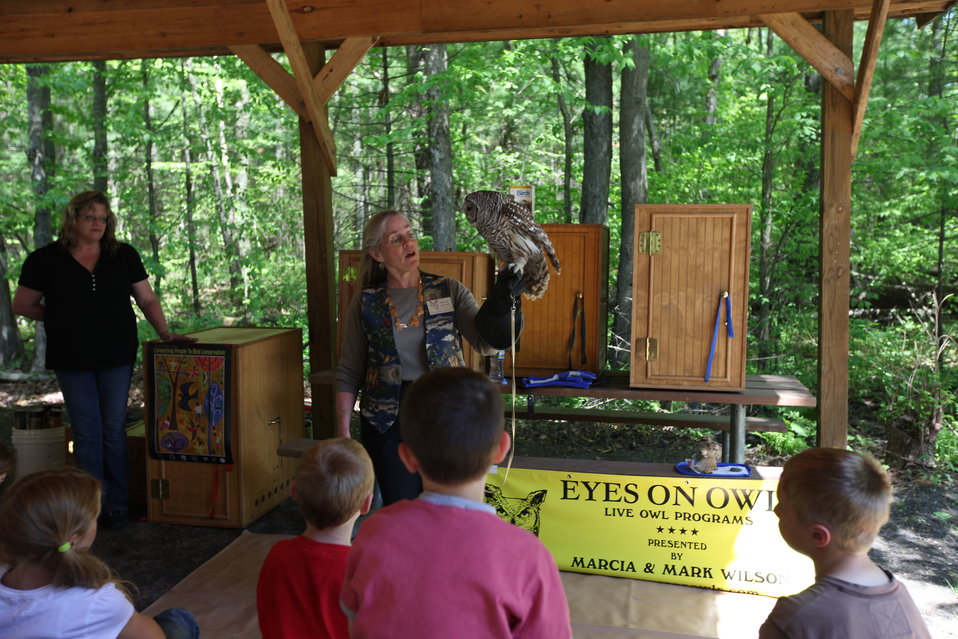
Youth Fishing Day 2012

Megan Nagel/USFWS